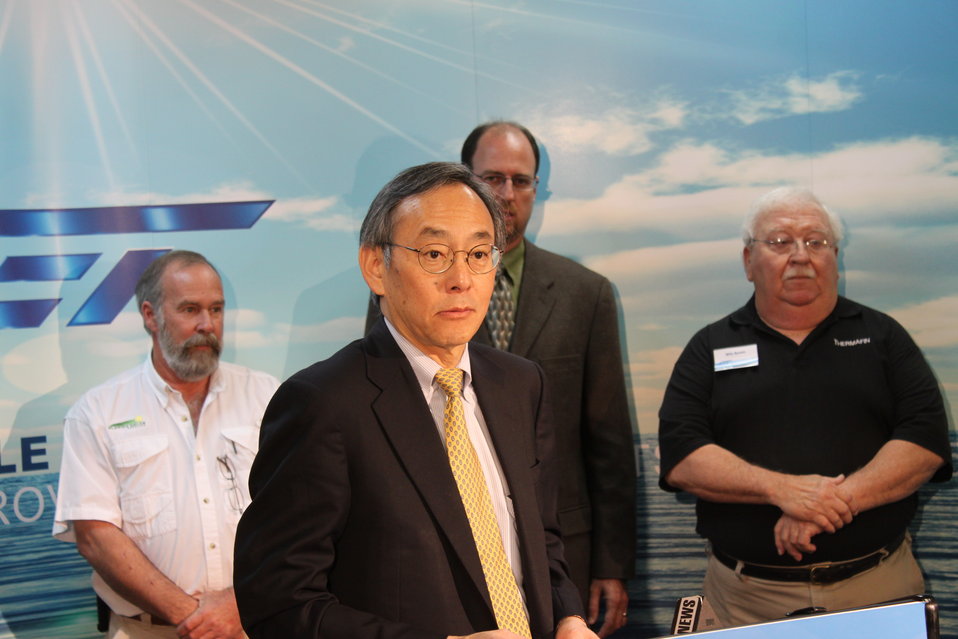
Norm 071